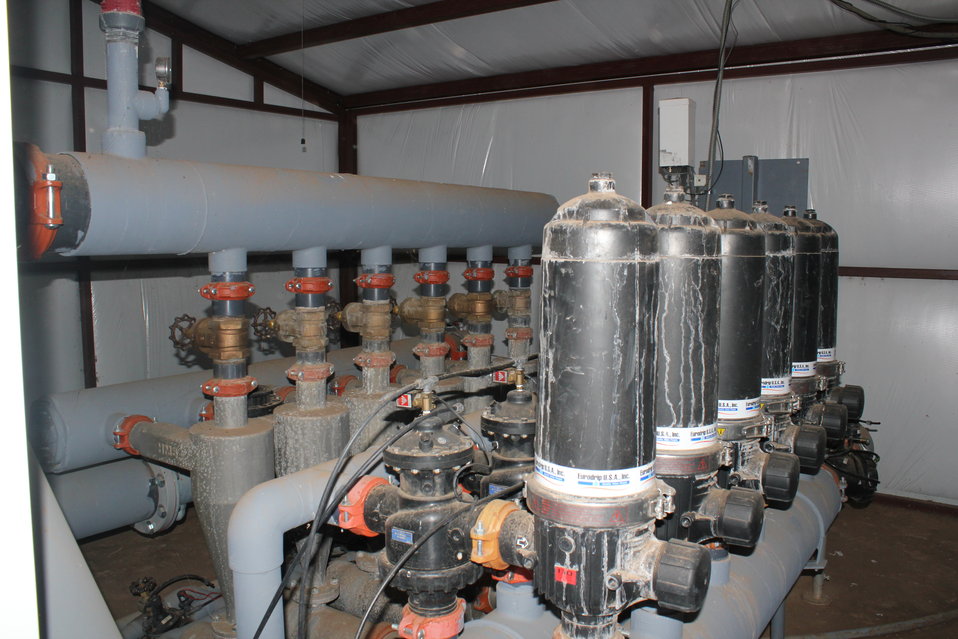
The Gruhlkey brothers installed subsurface drip irrigation on their farm in 2011 through technical and financial assistance from the NRCS through the Ogallala Aquifer Initiative.